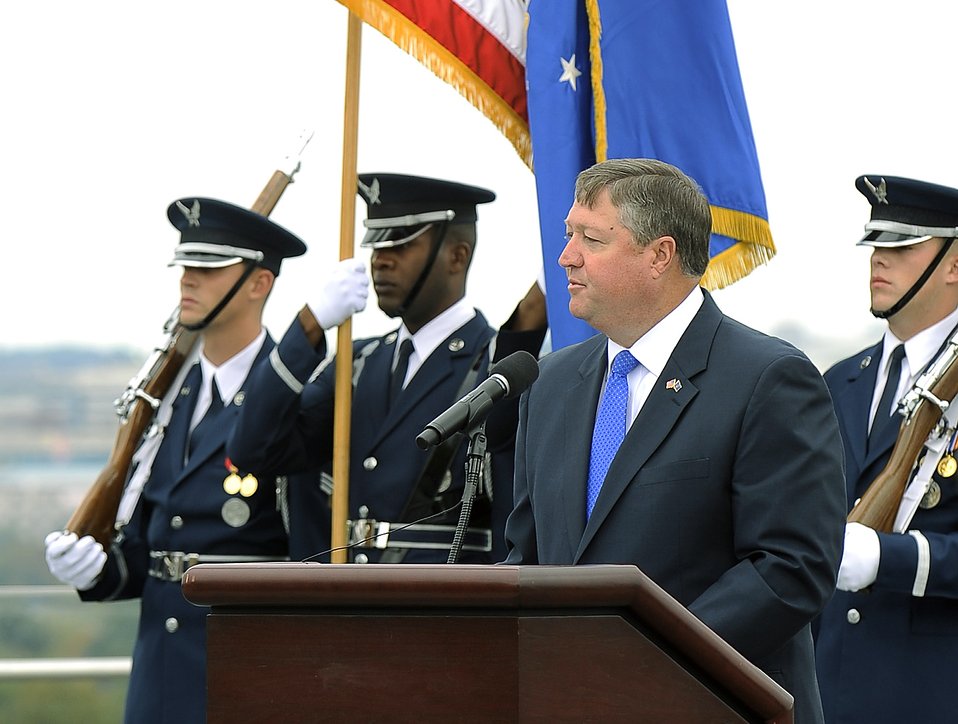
Secretary of Defense Robert M. Gates

Secretary of the Air Force Michael B. Donley gives his remarks at the Air Force Memorial in Arlington, Va. after being sworn in by Defense Secretary Robert M. Gates Oct. 17.